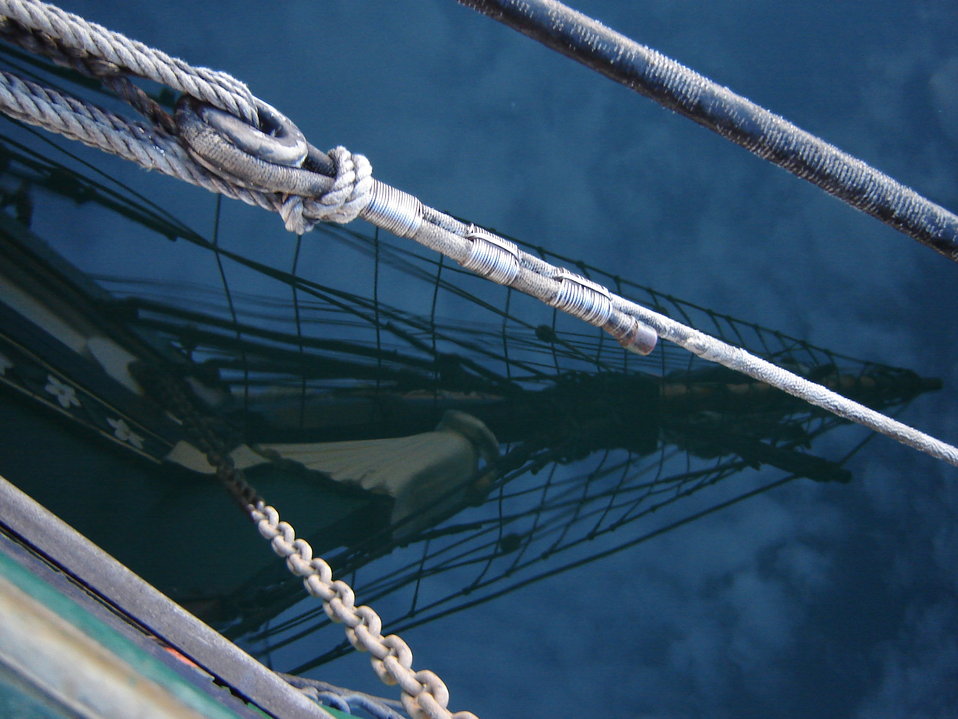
Photo taken by Graham Kinglsey